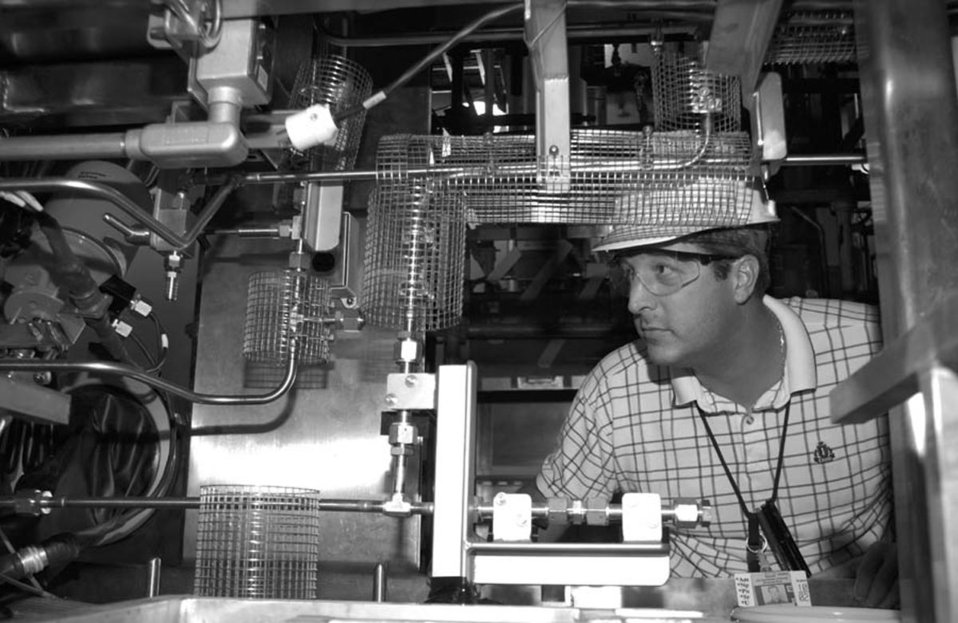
SRS TRITIUM TESTING MANAGER P. BANDOLA INSPECTS T-CAP COLUMN C IN THE LAST REMAINING ROOM IN THE 233-H FACILITY.

DOE'S SAVANNAH RIVER SITE COMPLETED DESIGN, PROCUREMENT AND CONSTRUCTION ACTIVITIES FOR THE MAJOR PORTION OF THE TRITIUM FACILITY MODERNIZATION AND CONSTRUCTION (T-CON) PROJECT. THE PROJECT IS DESIGNED CONSOLIDATE CAPABILITIES AND UPDATE TRITIUM PROCESSING AND STOCKPILE SUPPORT.